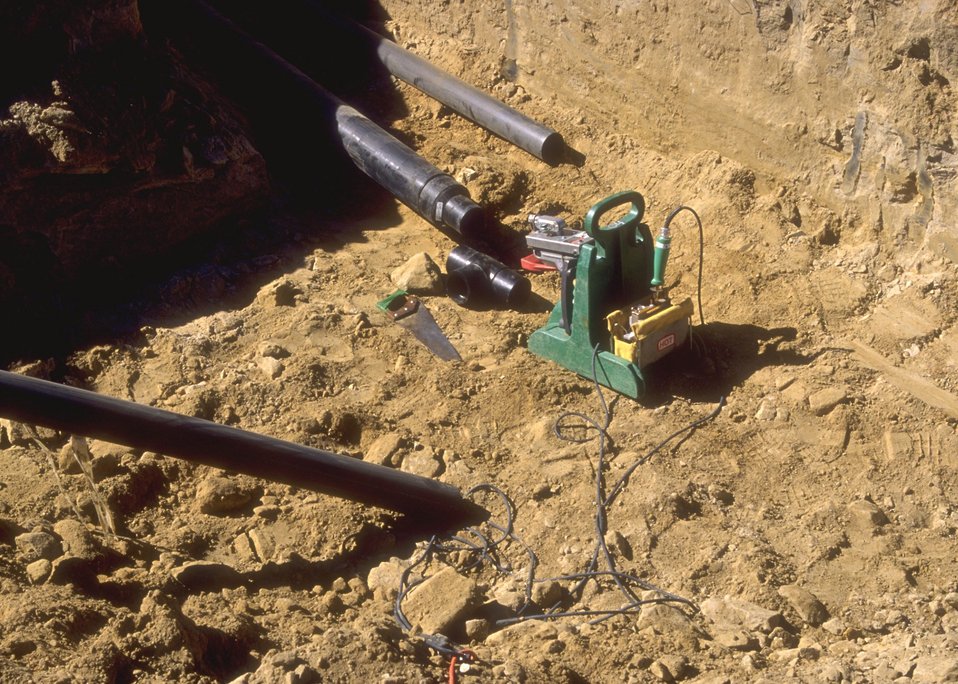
Construction for coal bed methane development, Buffalo Field Office.